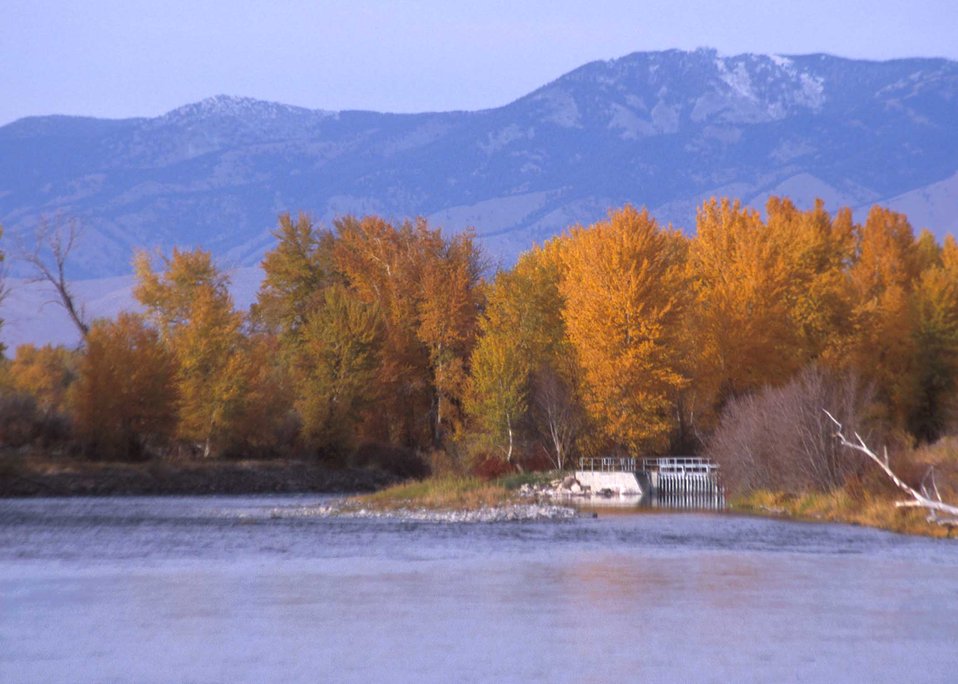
A beautiful fall day on the famous Salmon River, also known as "The River of No Return.".